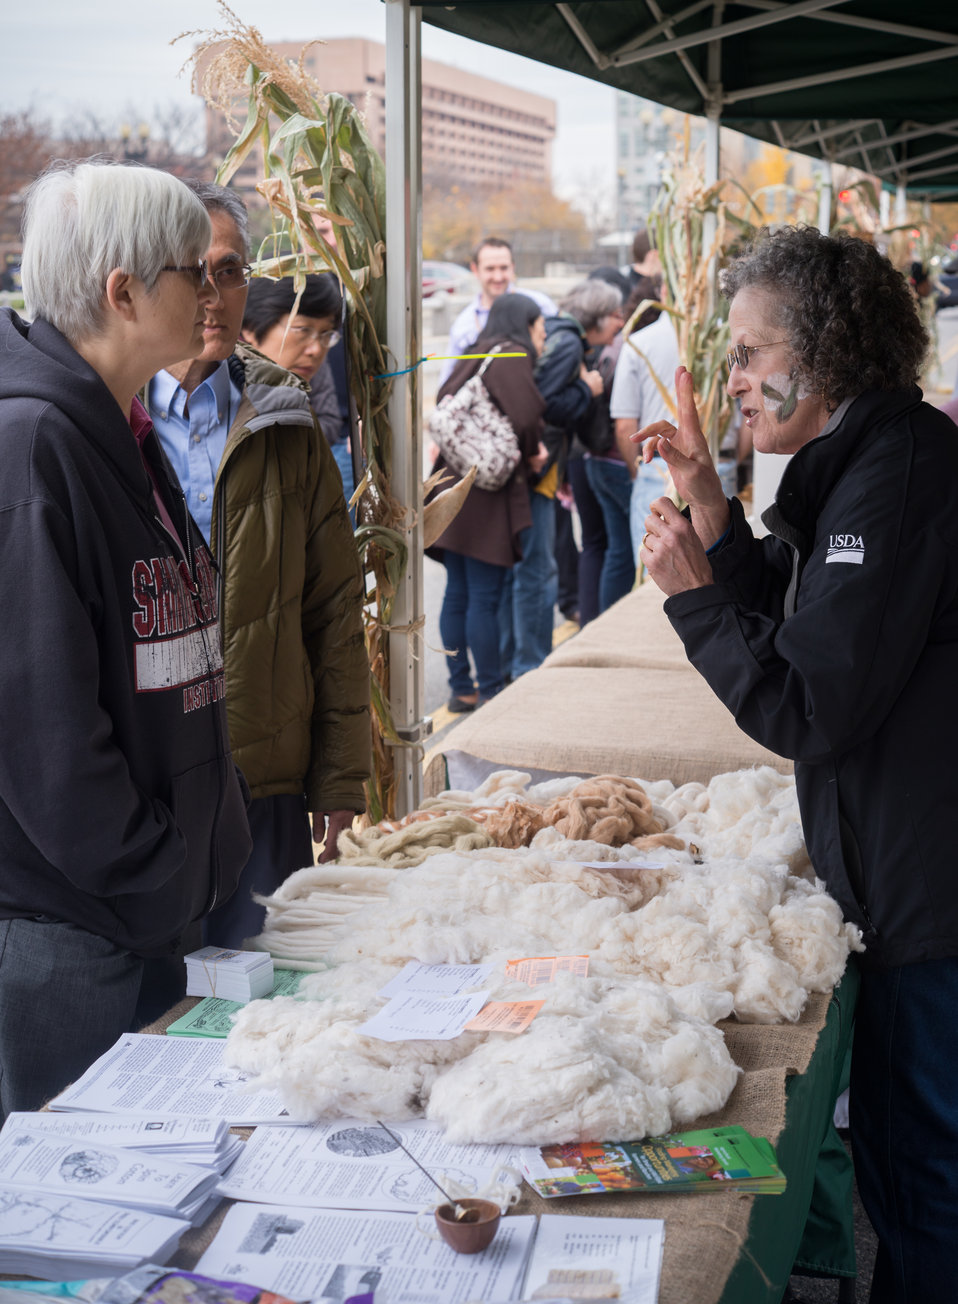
U.S. Department of Agriculture (USDA), National Organic Program, Agricultural Marketing Specialist and USDA Executive Master Gardener Lee Cliburn talks about spinning cotton into thread, during the final outdoor market and Harvest Festival at the USDA Whitten Building east parking lot in Washington, D.C., on Friday, November 22, 2013.